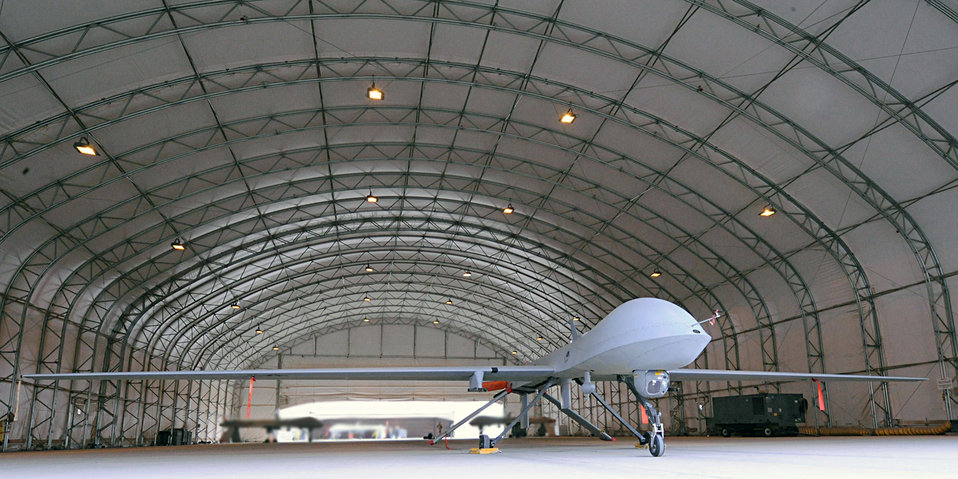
Airmen support Iraqi elections, see history in making

An MQ-1 Predator stands ready to take to the sky in support of the 2009 Iraqi provincial elections Jan. 30 at Joint Base Balad, Iraq. Fourteen of Iraq's 18 provinces will take part in the historic event, the first election since 2005.